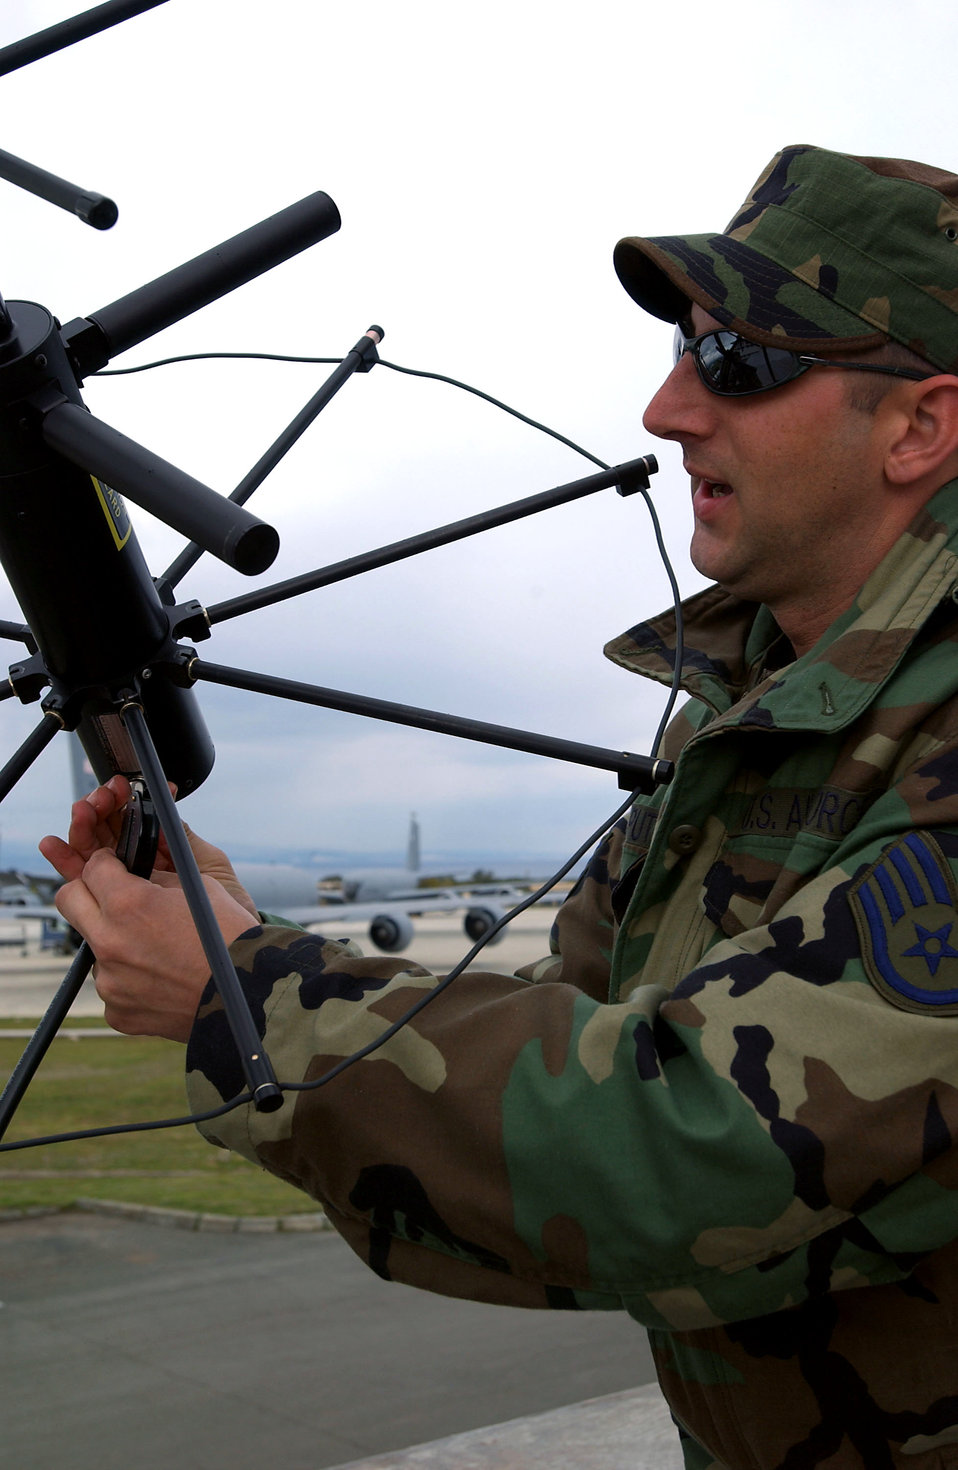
Putteet

OPERATION IRAQI FREEDOM -- Staff Sgt. Ryan Putteet, communication technician with the 401st Air Expeditionary Wing Communications Squadron, installs a radio antennae for ground to air communications while deployed to a Royal Air Force Base in the Eastern Mediterranean in support of Operation Iraqi Freedom.